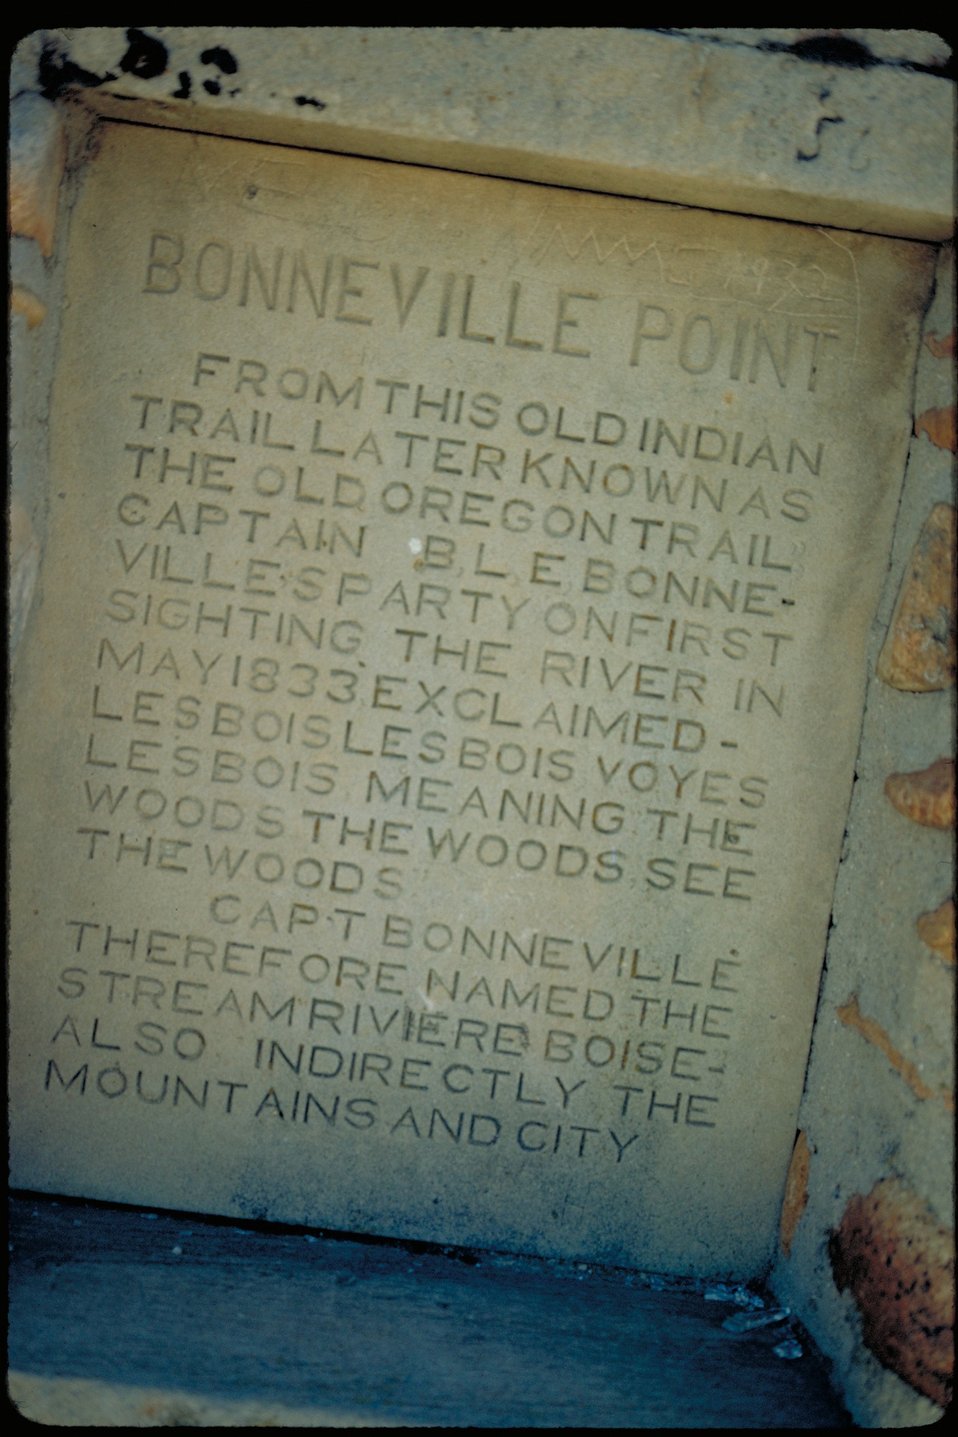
Oregon Trail Bonneville Point Lower Snake River District